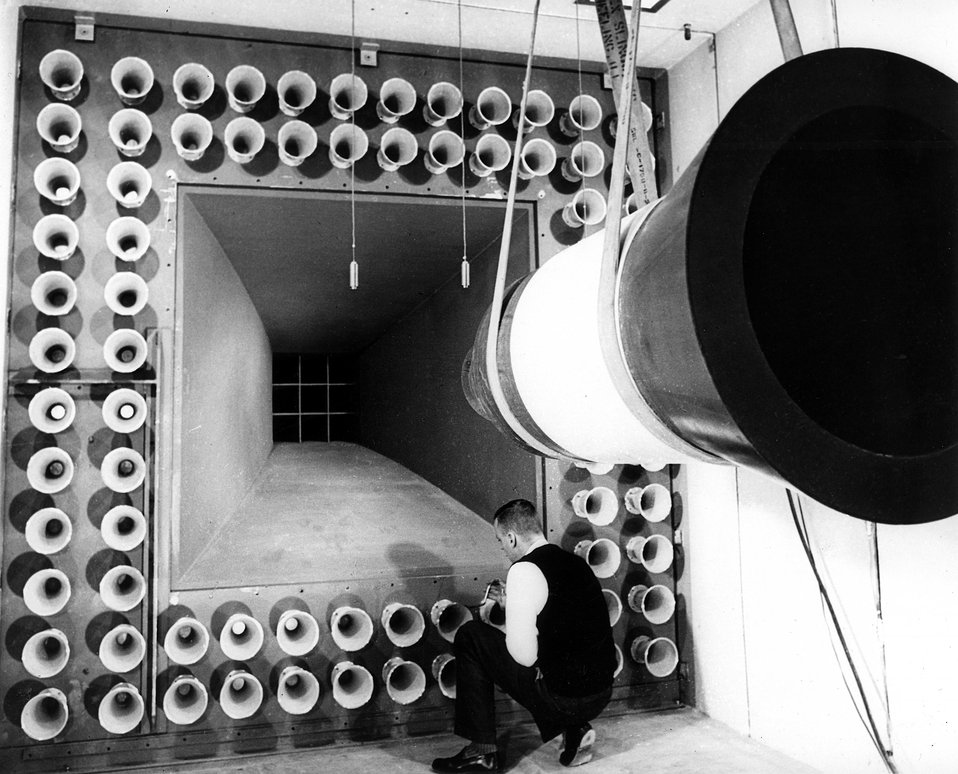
A full-scale model of a SNAP 10A reentry vehicle is suspended within one of the chambers at the acoustic facility of Sandia Laboratory.